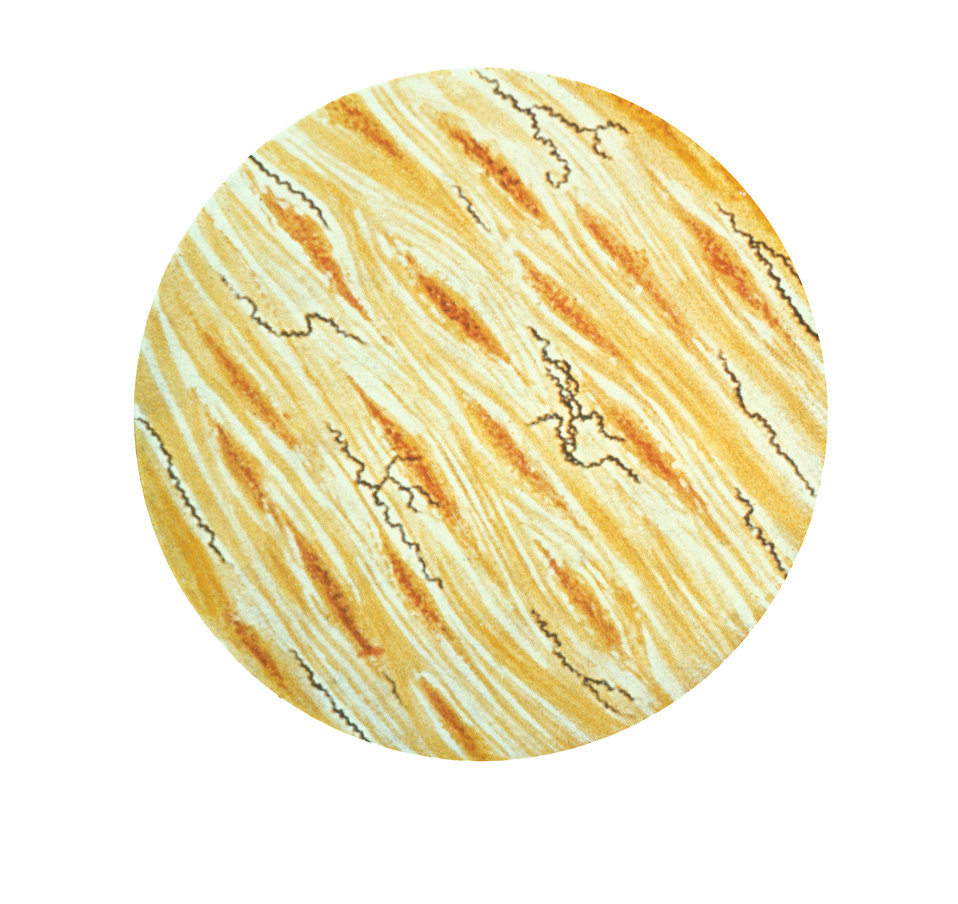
This illustration depicts a photomicrographic view of a Levaditi-stained culture specimen revealing the presence of numerous Treponema pallidum bacteria.